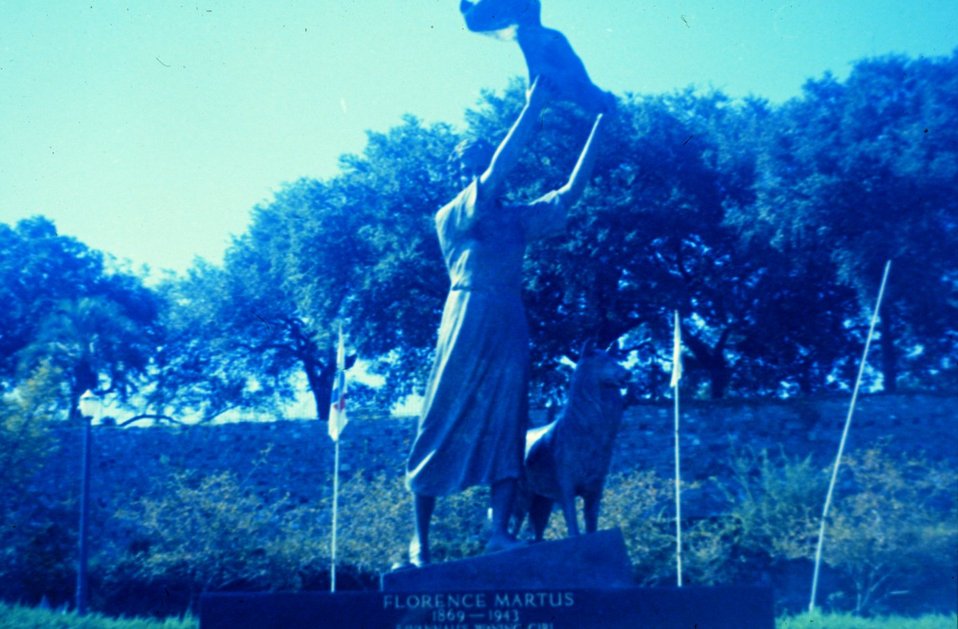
Florence Martus, Savannah's Waving Girl. This statue commemorates a lady who brightened the lives of thousands of sailors . Florence waved goodbye to hundreds of ships leaving the port of Savannah